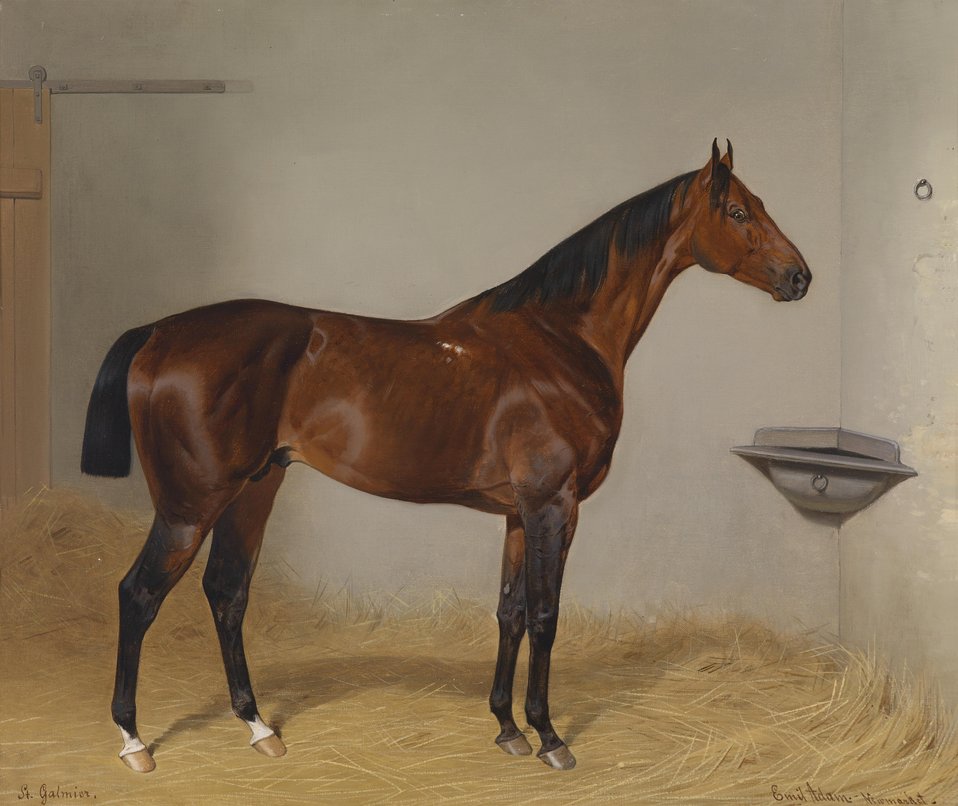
Deutsch: Pferdeportrait 'St. Galmier', signiert, bezeichnet Emil Adam Newmarket, Öl auf Leinwand, 55 x 64,5 cm